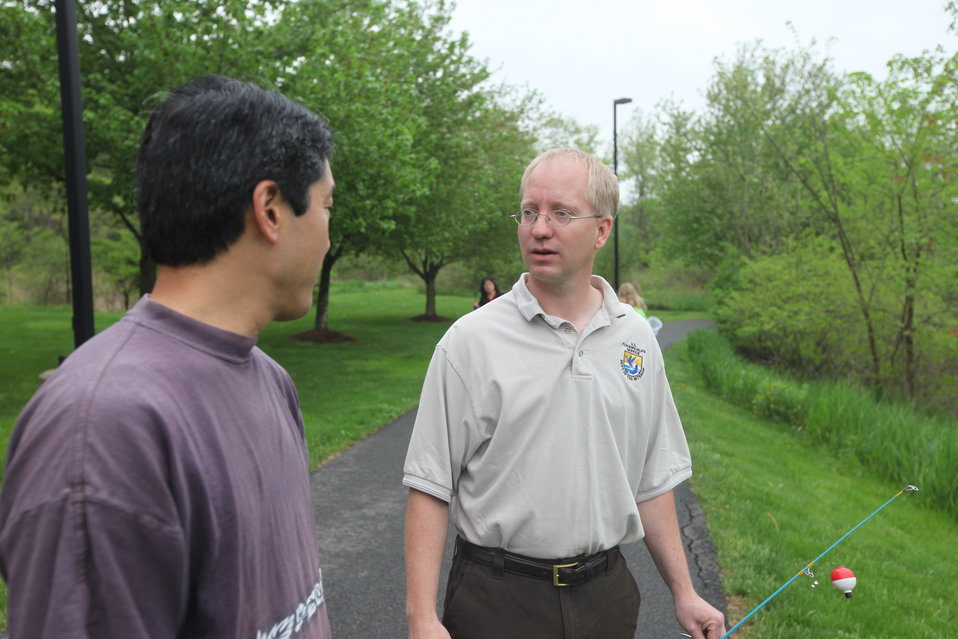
Fishing Derby